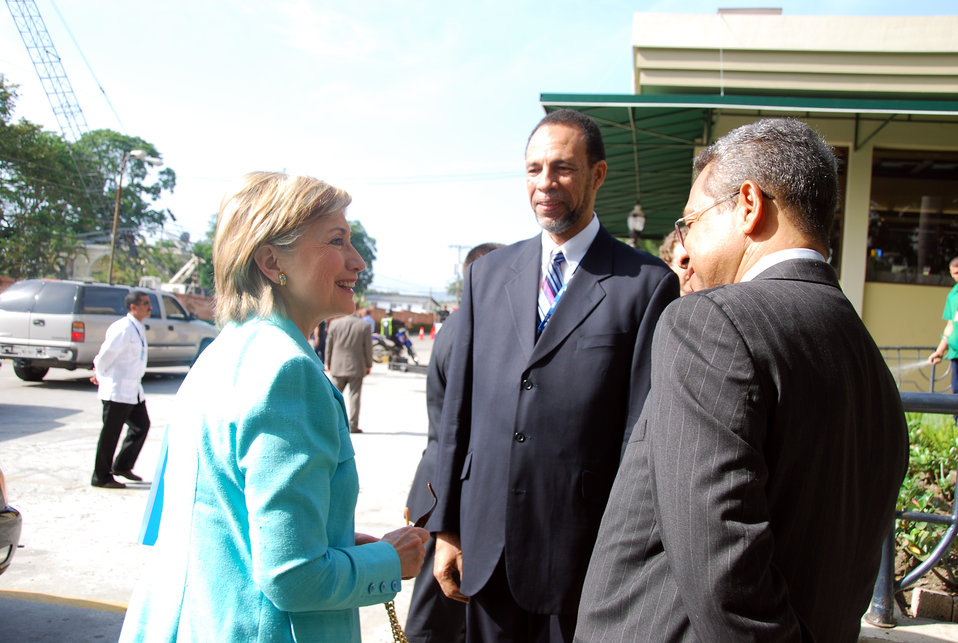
Secretary Clinton Meets With CARICOM Leaders

U.S. Secretary of State Hillary Rodham Clinton is greeted by Dr. Kenneth Baugh, CARICOM Council for Foreign and Community Relations (COFCOR) Chair and Jamaican Foreign Minister, and Ambassador Colin Granderson, CARICOM Assistant Secretary General at her arrival for a meeting with CARICOM Foreign Ministers at Club Arabe Hondureno, site of the 39° Organization of American States General Assembly in San Pedro Sula, Honduras, June 2, 2009. From left to right: Secretary Clinton, Ambassador Granderson, and Dr. Baugh.